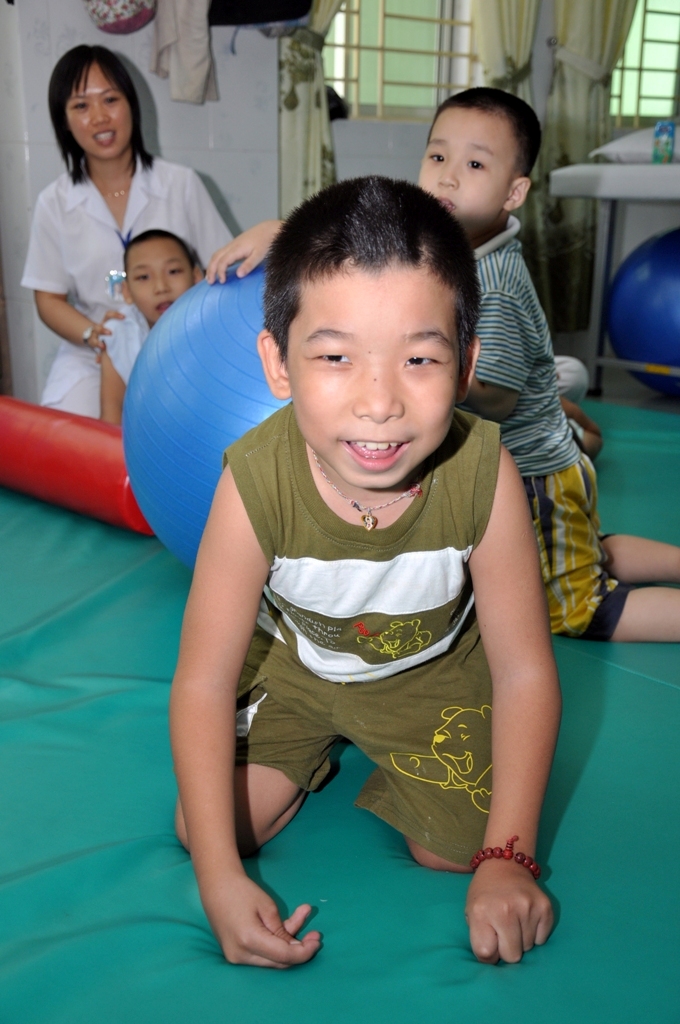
USAID assists persons with disabilities in Vietnam

A young boy receives treatment and social encouragement at a USAID-supported center in Danang.